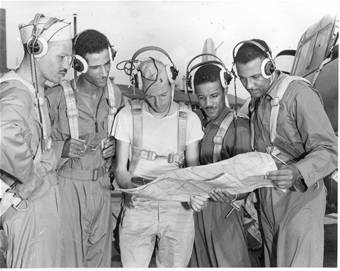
Archie Williams goes over weather conditions before a flight